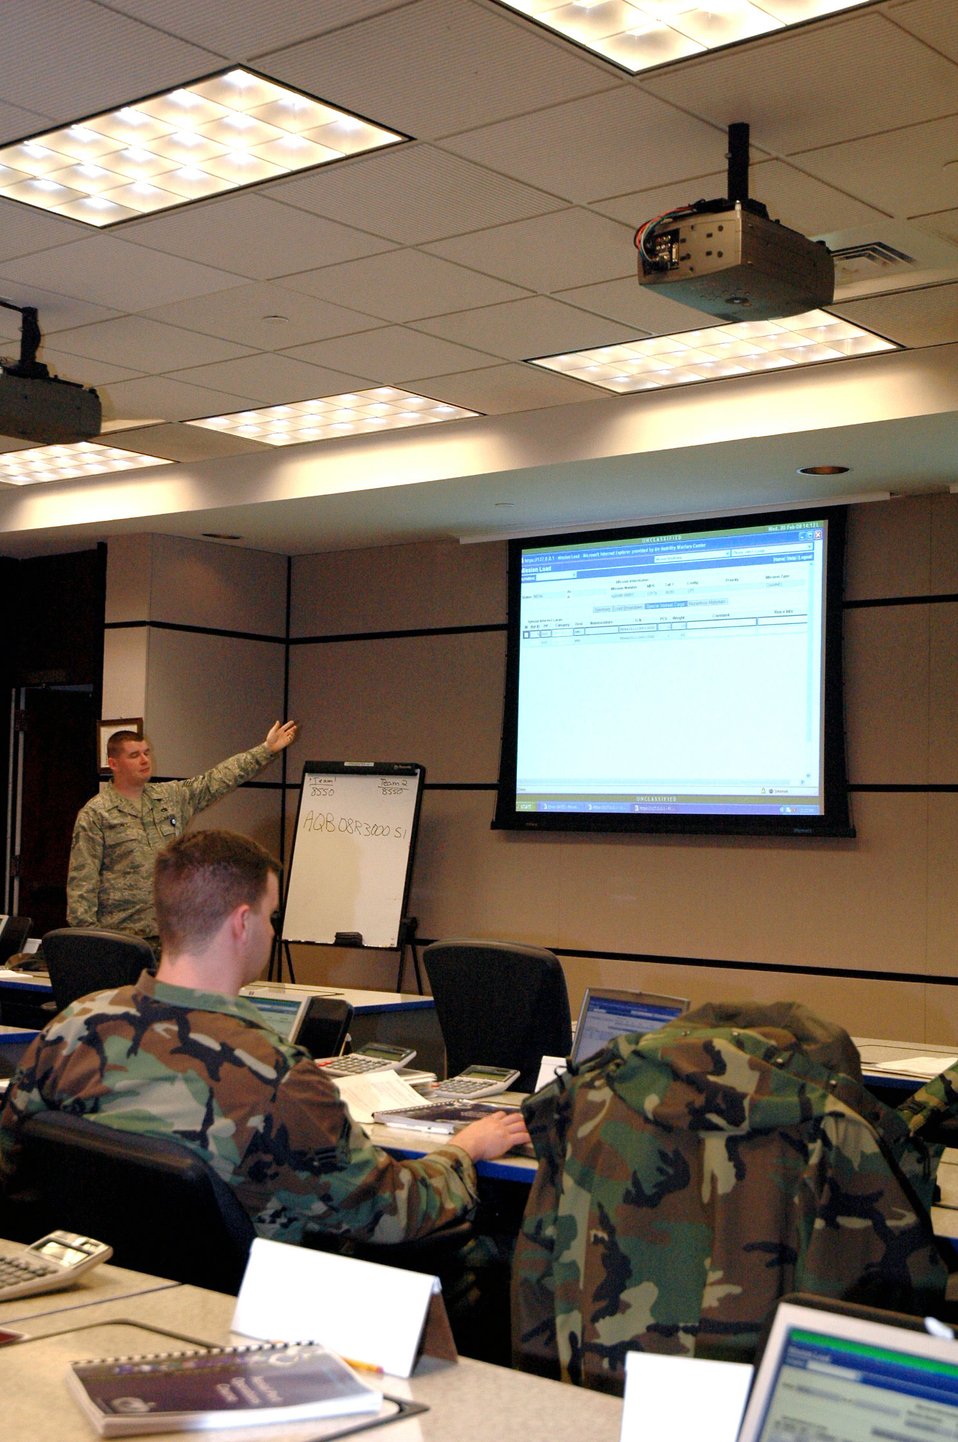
Aerial Port Airmen go to school

Staff Sgt. Paul Sweeney, an instructor for the U.S. Air Force Expeditionary Center's Aerial Port Operations Course, talks with students Feb. 20 as they work on their computers during course instruction inside the center at Fort Dix, N.J. The course, taught by instructors in the center's Mobility Operations School Air Transportation Branch, teaches Airmen in the Air Force air transportation career field subject areas such as air freight, passenger service, air terminal operations, and higher headquarters functions.